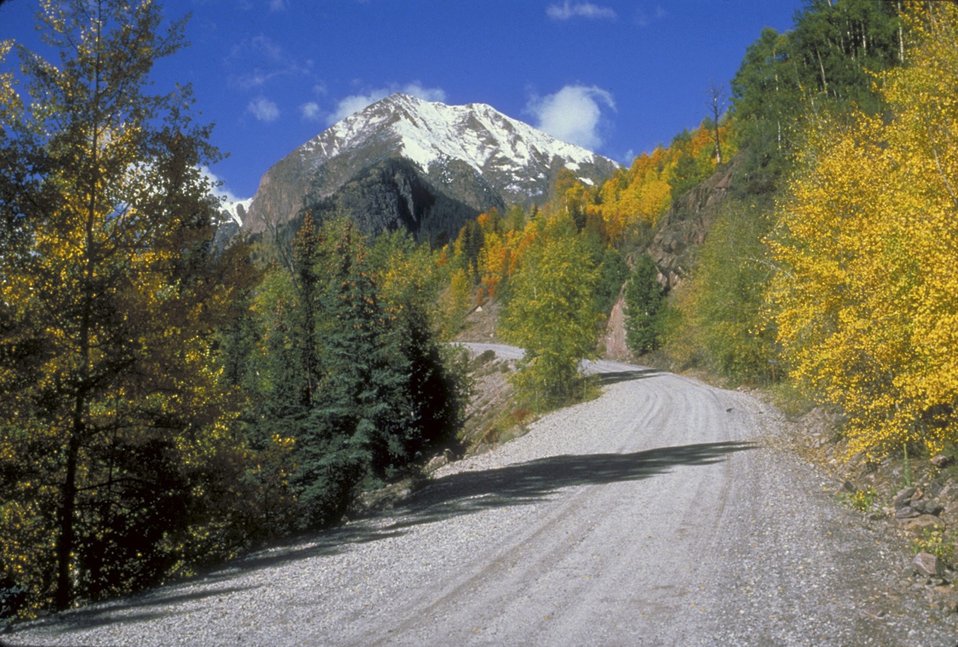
Lake Fork of the Gunnison River, Alpine Loop National Back Country Byway